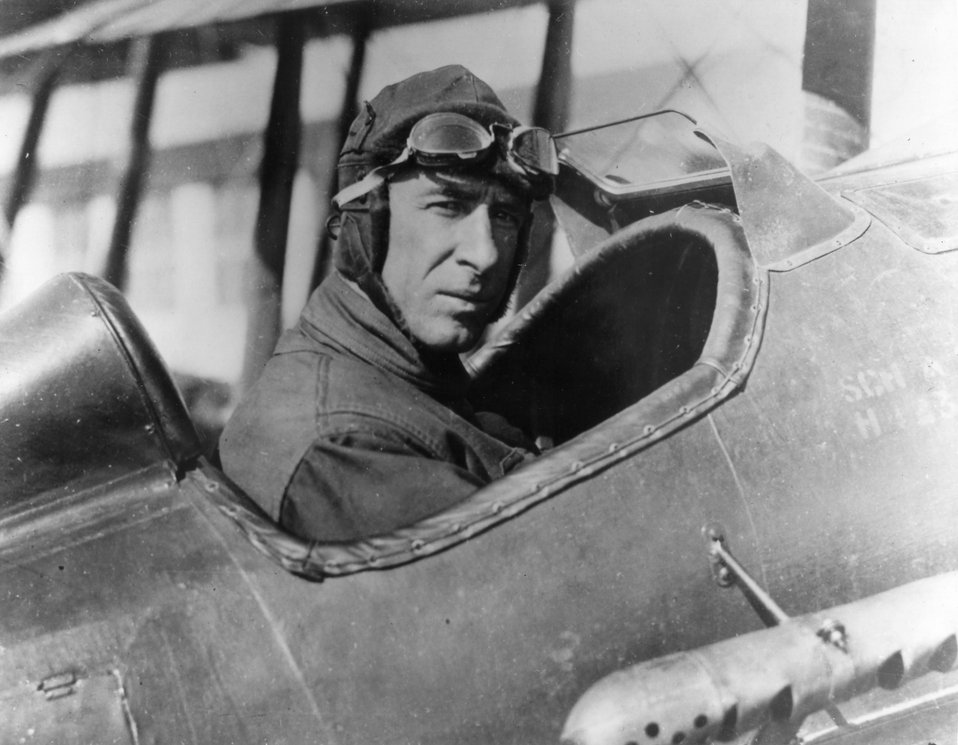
William C. Ocker, Father of Blind Flying

EARLY YEARS -- William C. Ocker, the father of